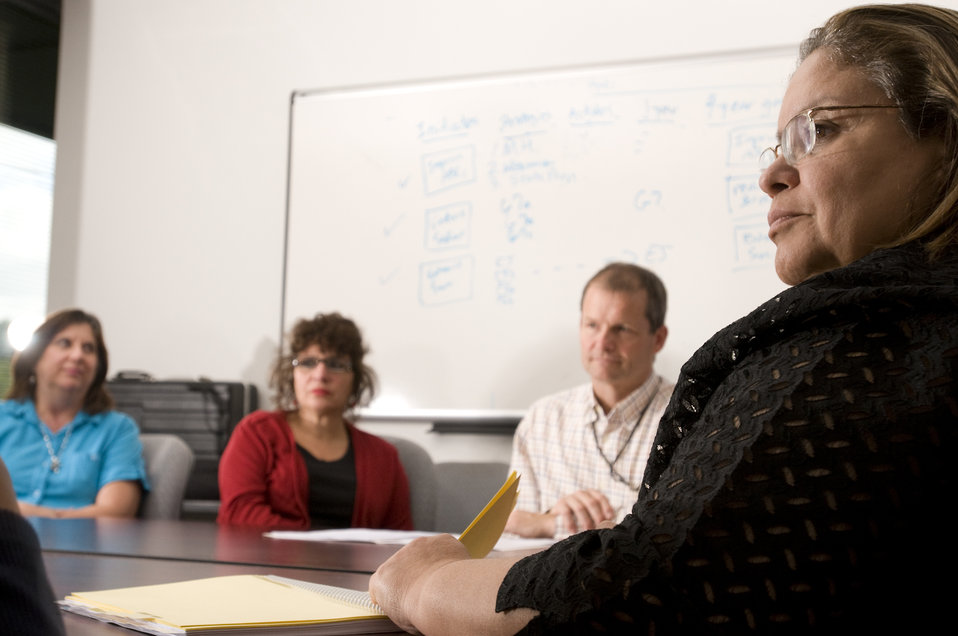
This image depicts a group of healthcare workers seated at a table discussing a strategy they would be implementing, which would guide them through an instructional campaign centered on the education of the diabetic patient to the healthy lifestyle one must implement in order to maintain control over the detrimental effects of this disease.